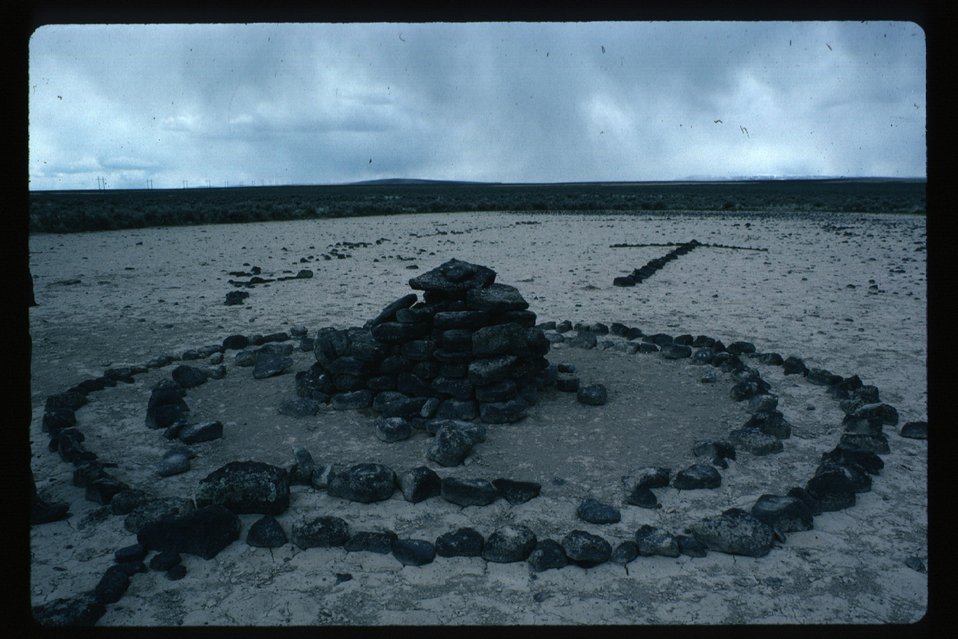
Rock Alignment Archeology LSRD Lower Snake River District